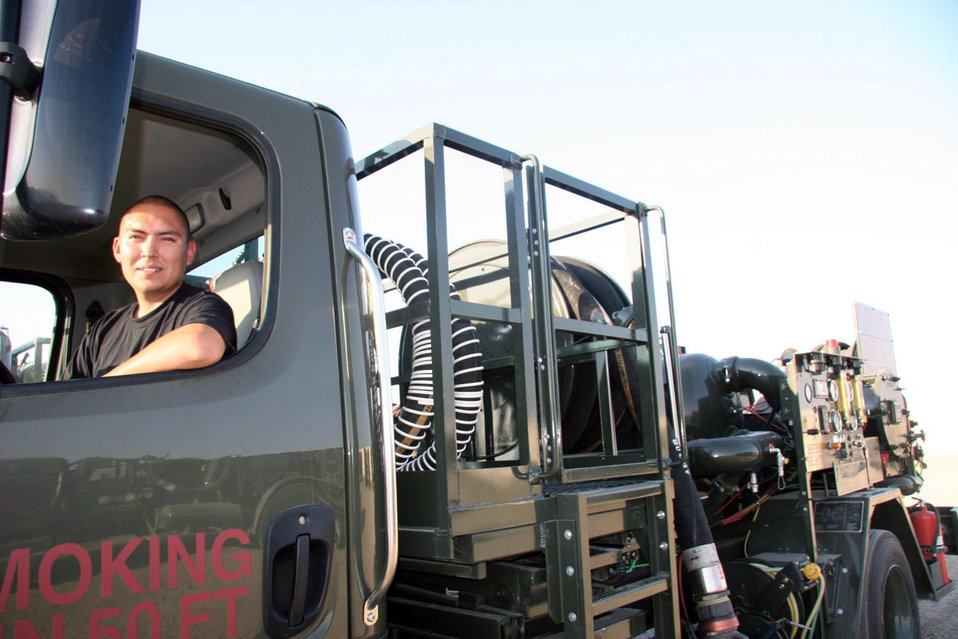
White Hawk soars, becomes Air Force warrior

Senior Airman Shiloh White Hawk, 380th Expeditionary Logistics Readiness Squadron, fuels distribution technician checks on the moose head connected to the hydrant that brings fuel from an underground source to the R12 HSV hydrant servicing vehicle used to refuel the KC-10 Extender. Airman White Hawk is deployed from the 1st LRS at Langley Air Force Base, Va.